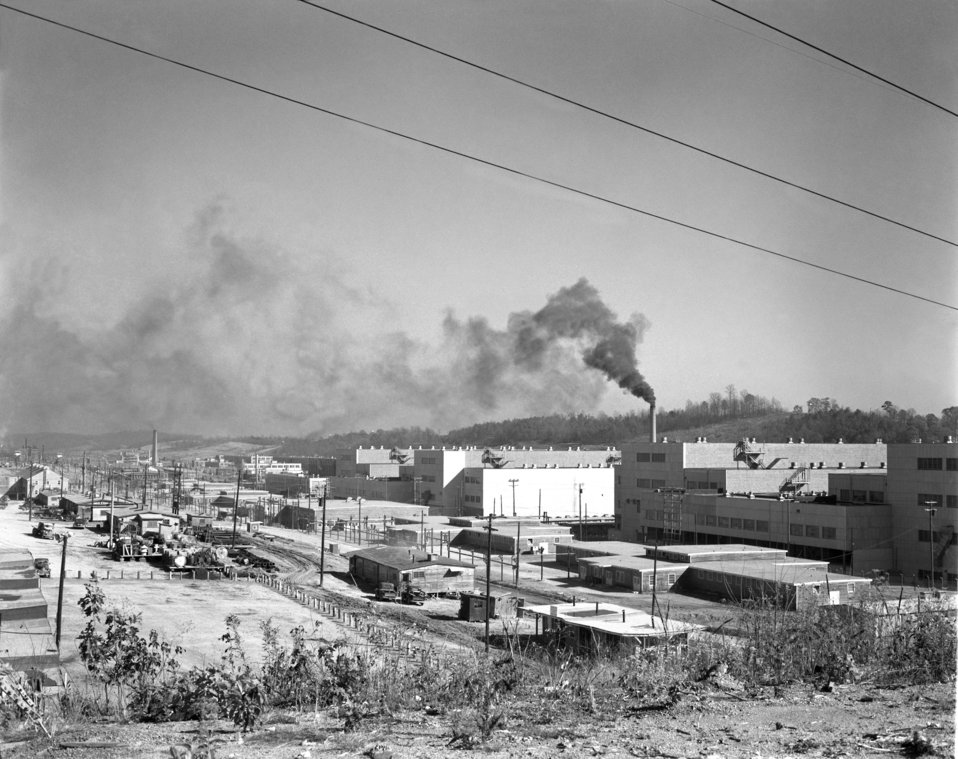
Y-12 Tennessee Eastman Plant Oak Ridge 1946

3283-6b DOE photo Ed Westcott 1946 Oak Ridge Tennessee